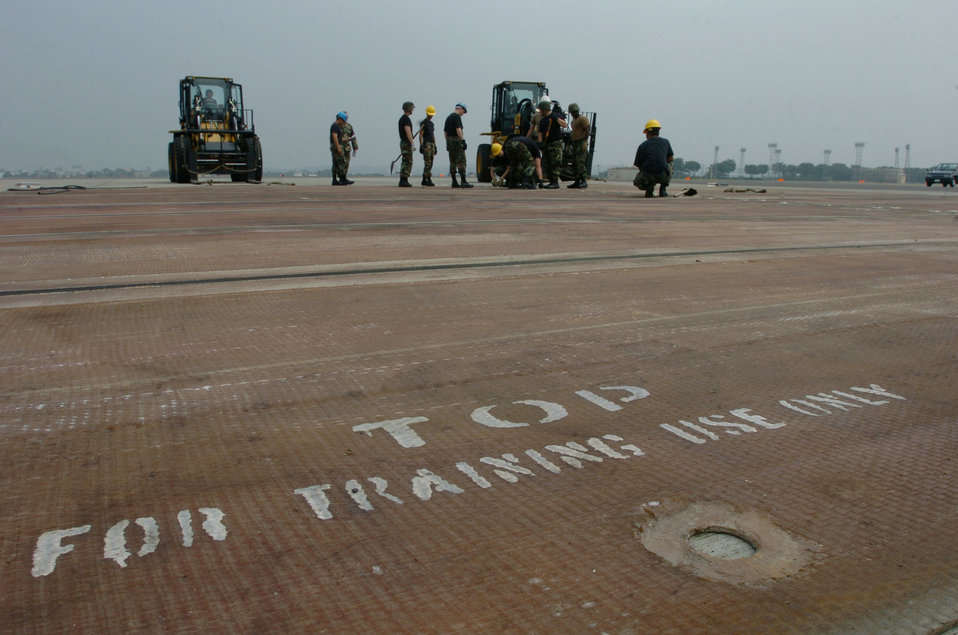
Running fiber

YOKOTA AIR BASE, Japan -- Airmen of the 374th Civil Engineer Squadron move fiberglass mats during airfield damage repair training on the flightline here. During the training, the Airmen simulated drilling holes into the runway to secure the mats. The mats provide a protective surface for aircraft landing in austere locations. The Airmen are trained to deploy into bare-base locations, assess airfield capabilities, prepare aircraft landing areas, clear obstacles, install emergency airfield lighting systems and repair airfield damage.